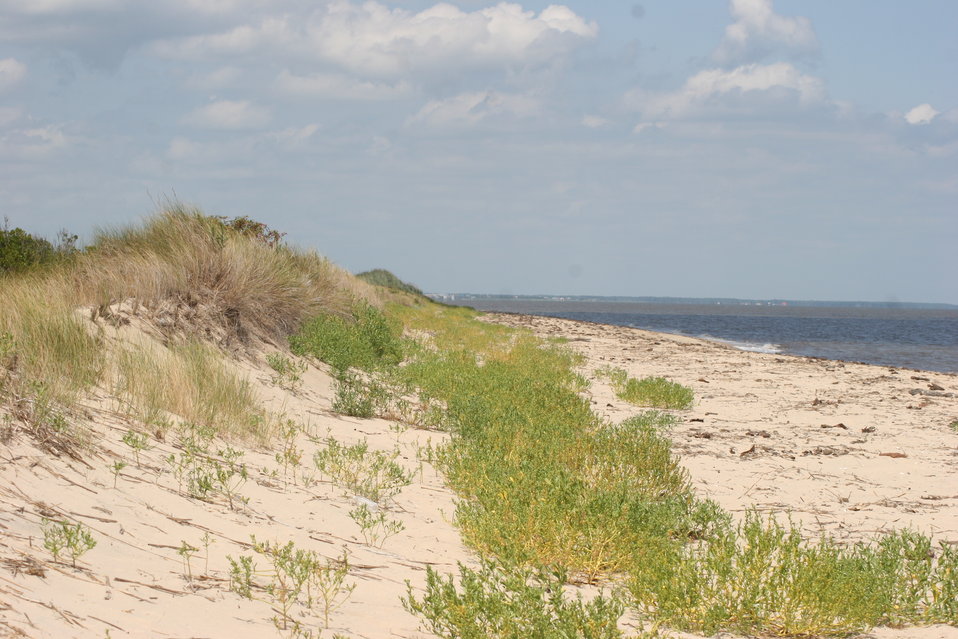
Dunes at Prime Hook NWR